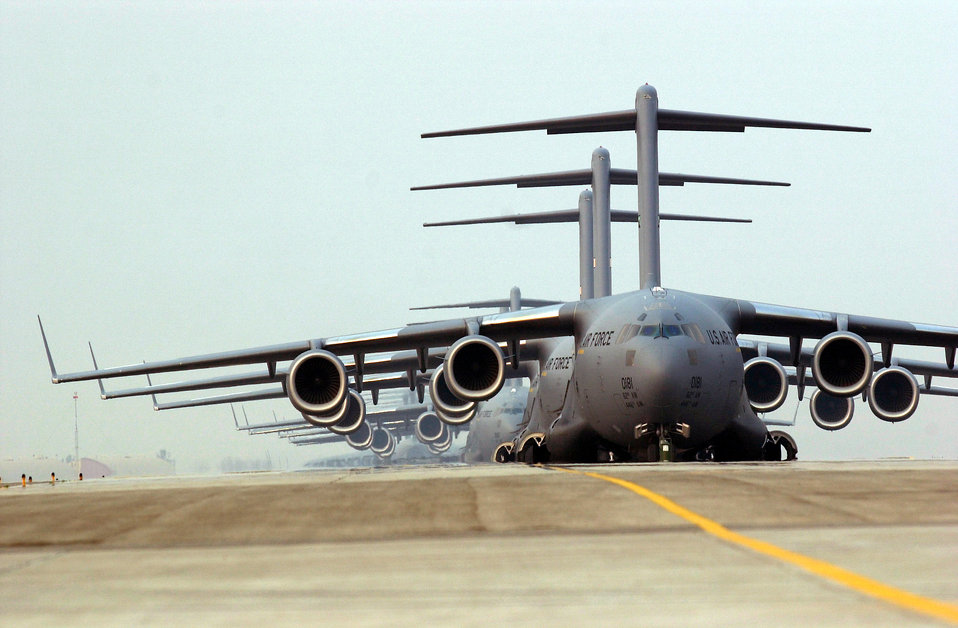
Heavy lifters

OPERATION IRAQI FREEDOM -- C-17 Globemaster III's wait for their cargo in the opening stages of Operation Iraqi Freedom. Operation Iraqi Freedom is the multinational coalition effort to liberate the Iraqi people, eliminate Iraq's weapons of mass destruction and end the regime of Saddam Hussein.